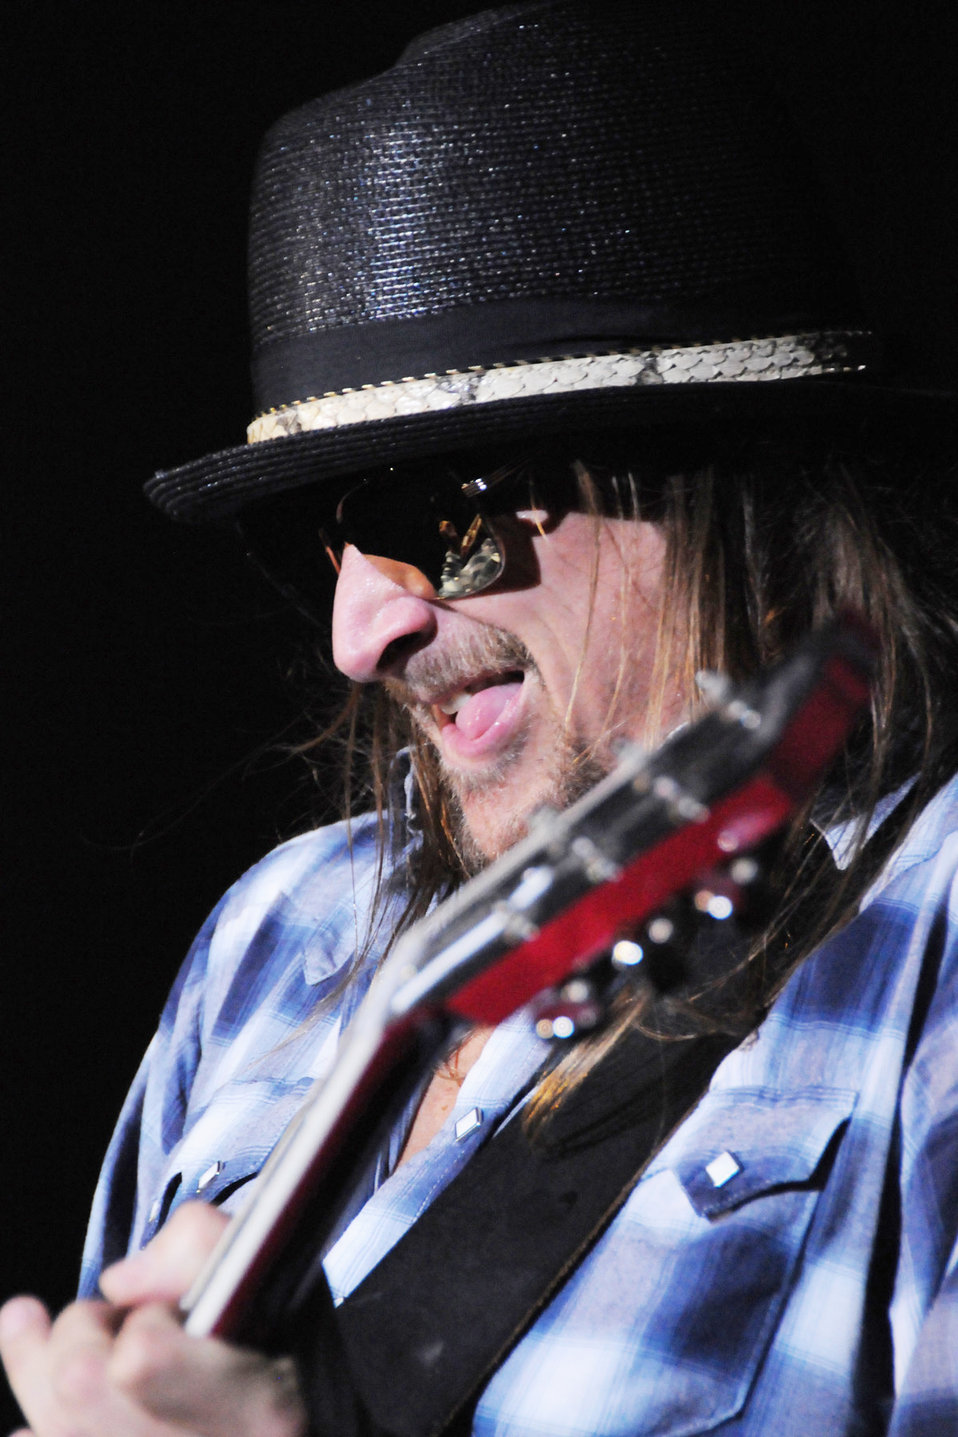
Entertainers put on a show for troops in Southwest Asia

Kid Rock performs for a live audience of deployed servicemembers Dec. 6, 2009 at an airbase in Southwest Asia. Tour for Troops 2009 will visit various deployed locations throughout Southwest Asia and Europe and is sponsored by the Air Force Reserve Command.